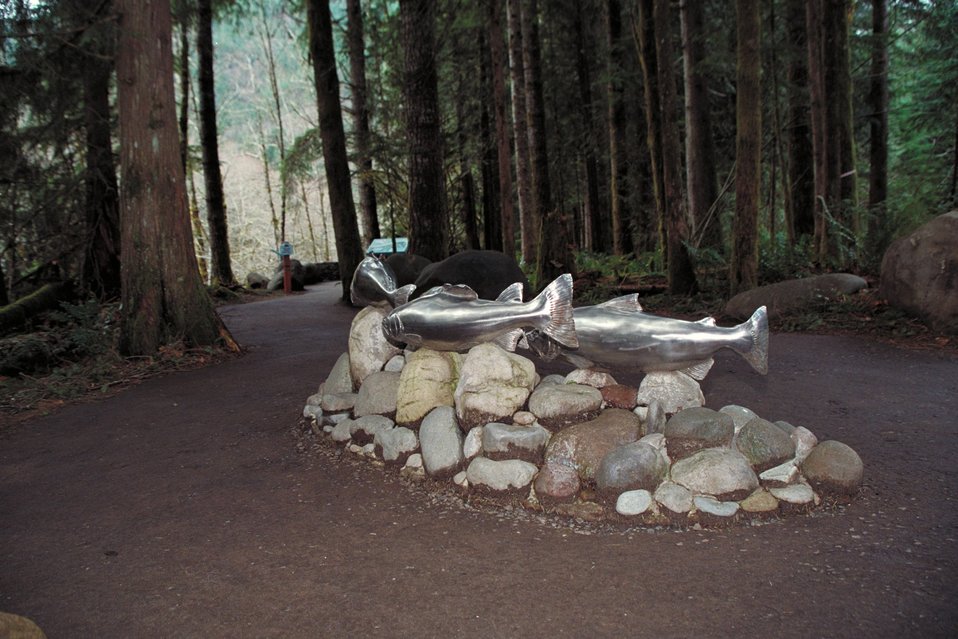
Cascade Stream Watch is an environmental education program conducted at BLM's Wildwood Recreation site.